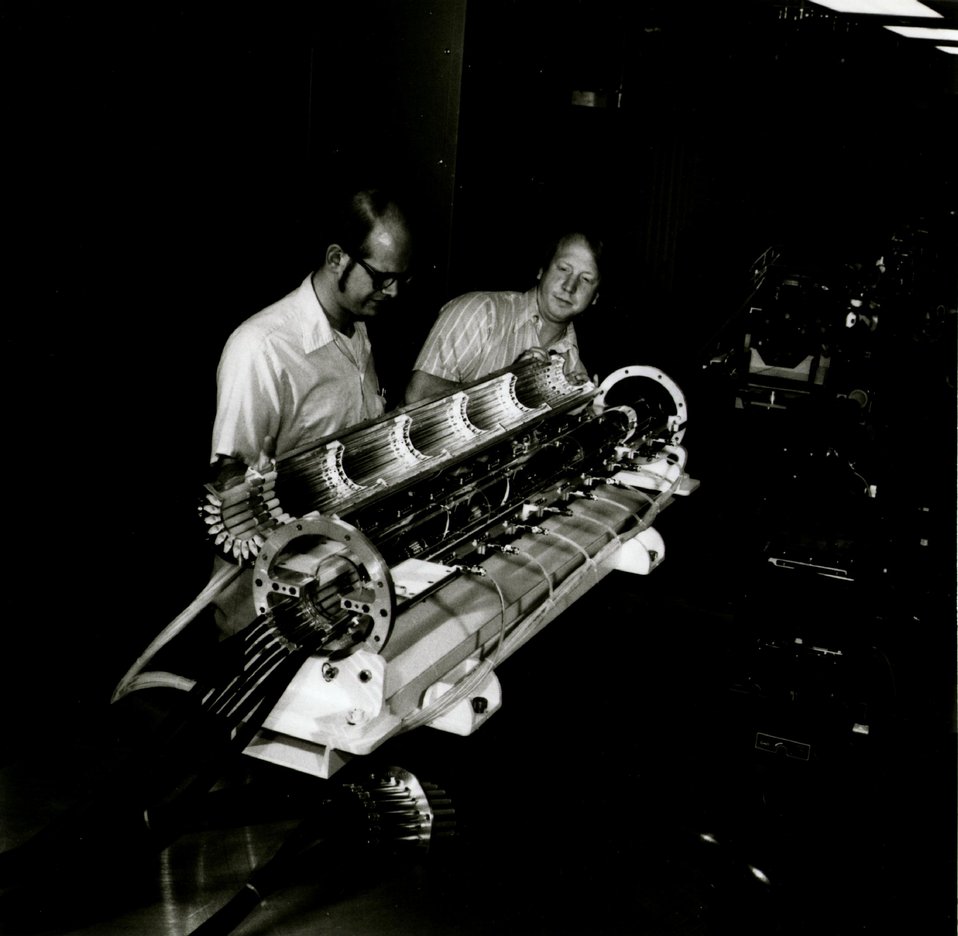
The neodymium glass laser system is being designed at the Laboratory with heavy use of computer simulation of proposed laser designs. Circa 1974.